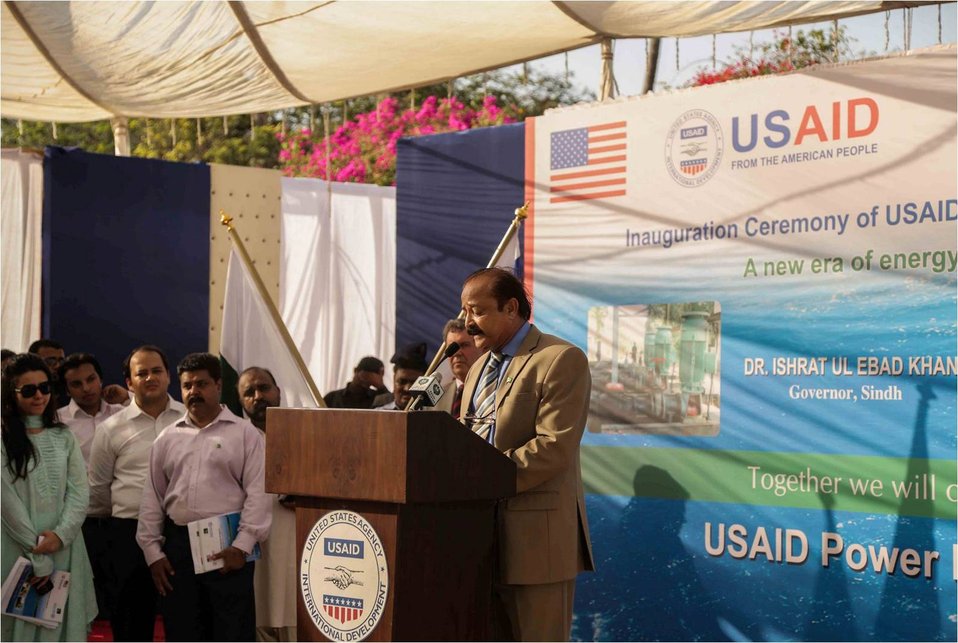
Mr Misbah Farid, MD KWandSB, speaking at the inauguration event